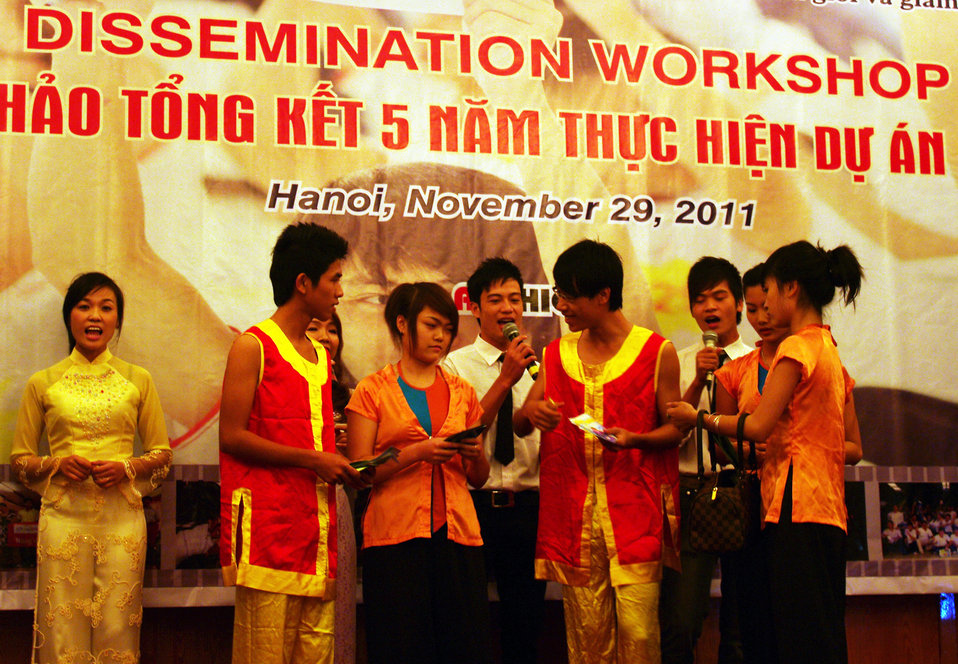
20111129STC Youth Voc Training Dissemination Hanoi RNyberg 5315